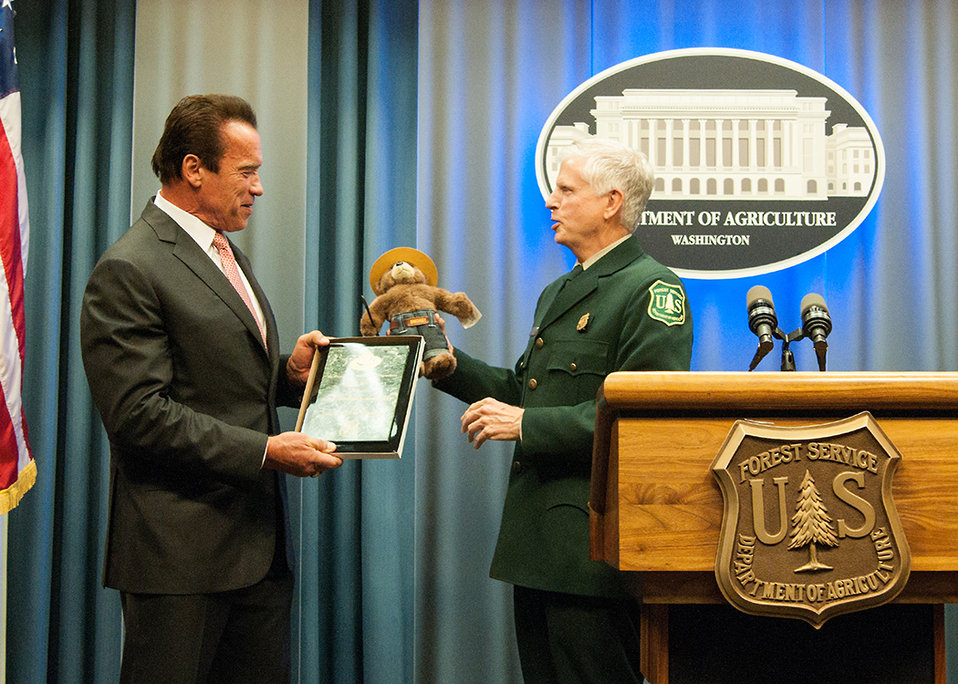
U.S. Forest Service Chief Tom Tidwell (right) presents former California Governor Arnold Schwarzenegger (left) with a plaque and Smokey Bear during an event honoring Gov. Schwarzenegger as an honorary Forest Ranger for his leadership on climate change during a ceremony at the U.S. Department of Agriculture in Washington, D.C. Wed., Oct. 29, 2013. Governor Schwarzenegger the agency’s third honorary Forest Ranger joins actress Betty White and Rolling Stones keyboard player Chuck Leavell as honorary rangers.